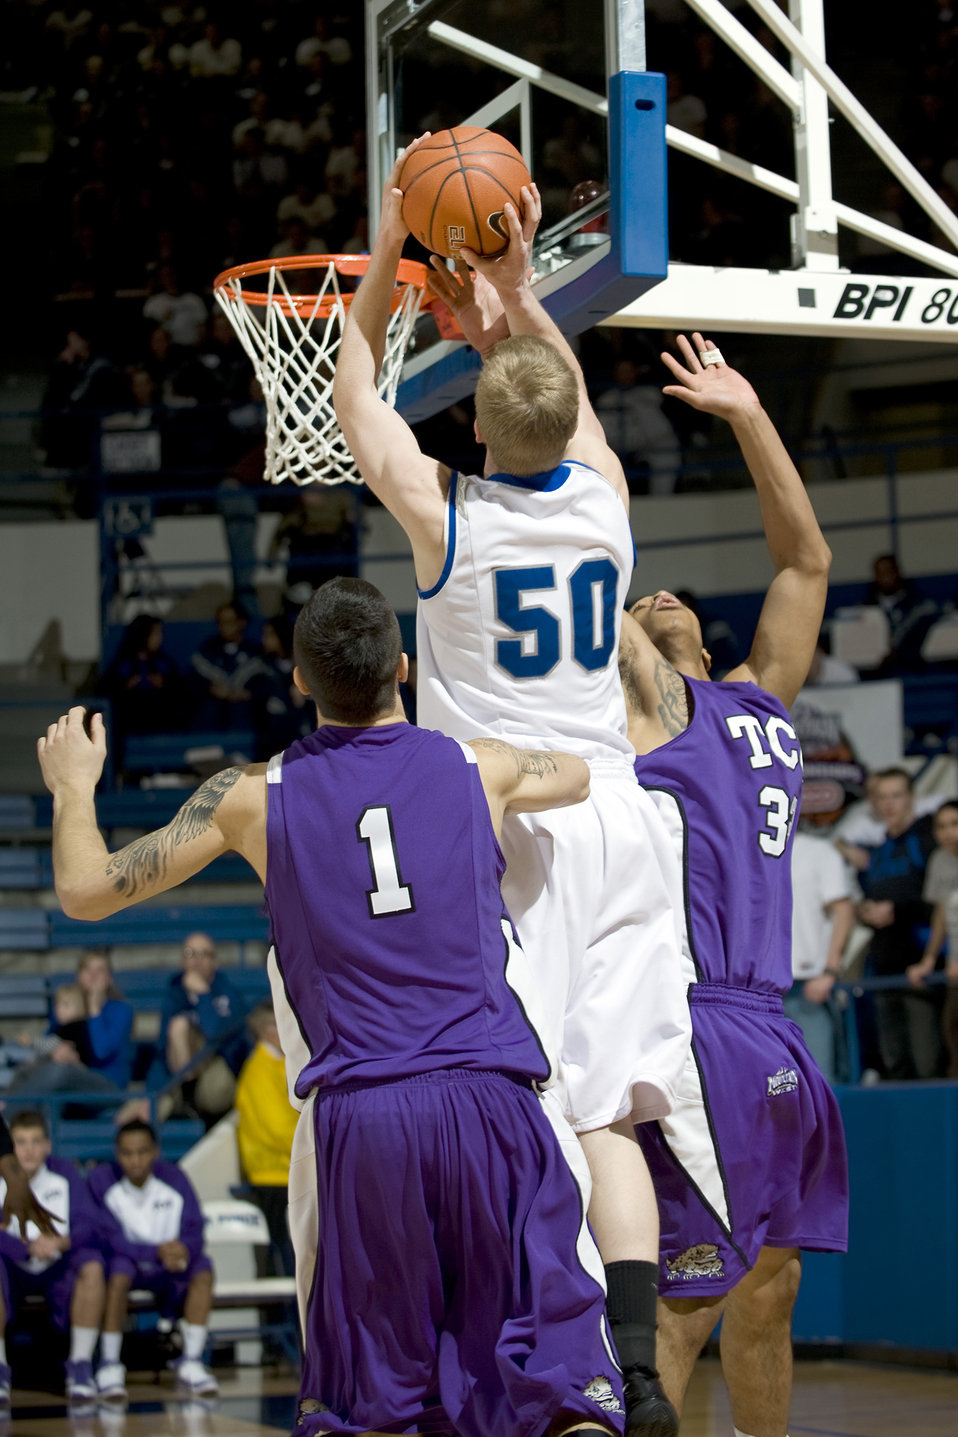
Horned Frogs surpass Falcons

Falcon senior forward Grant Parker goes up for 2 of his 11 points as the Falcons go against the Texas Christian University Horned Frogs Feb. 6, 2010, at the Academy's Clune Arena. The Falcons fell short of their goal, losing to TCU by a score of 65-51.